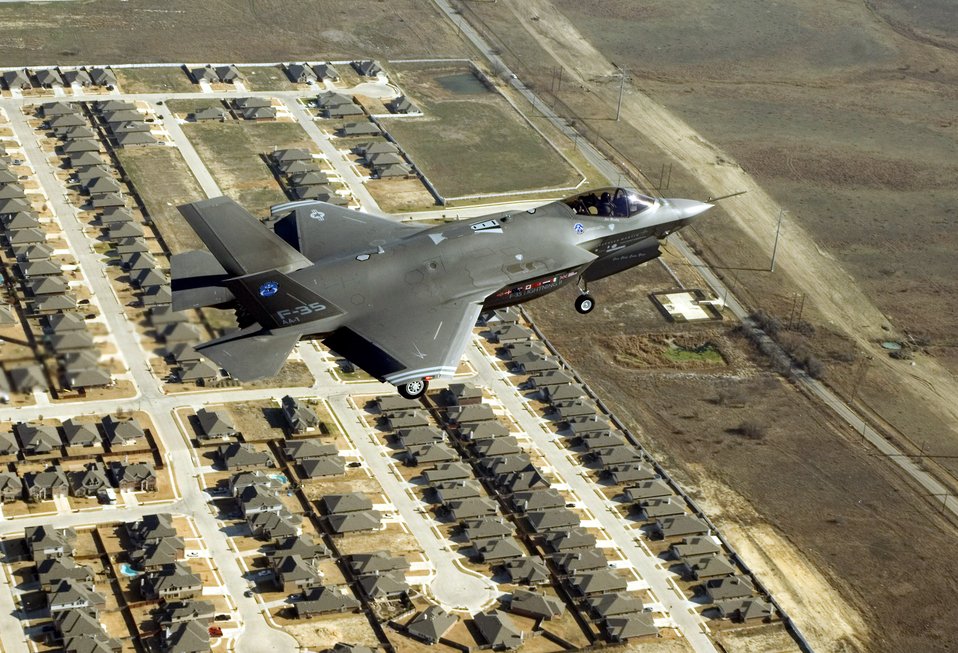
Initial flight

The F-35 Lightning II Joint Strike Fighter's initial flight took place Dec. 15 over Fort Worth, Texas.